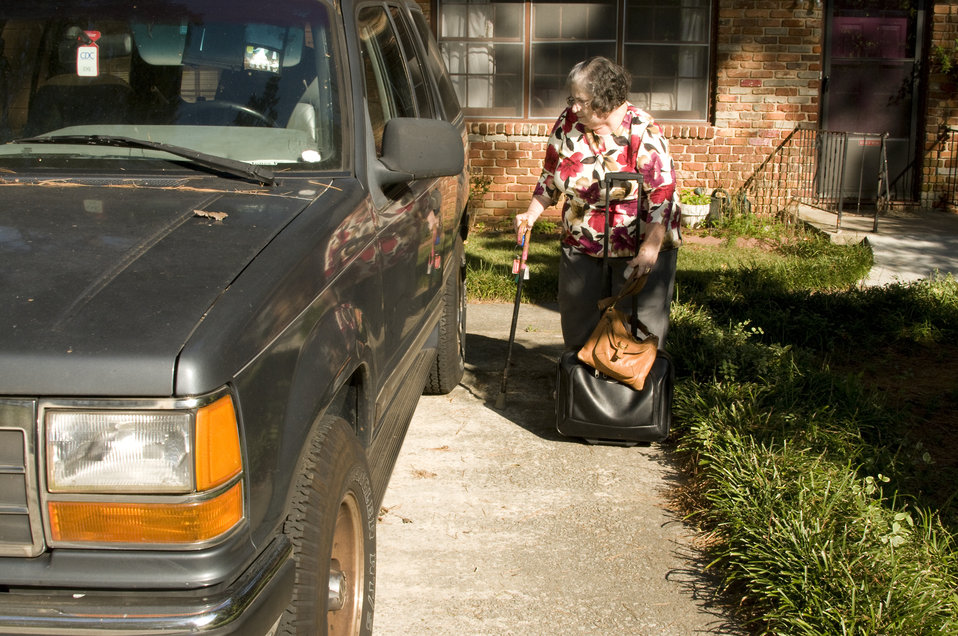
The woman pictured here is a rheumatoid arthritis patient, and was not letting her painful condition impeded her from carrying on with her daily activities, which included the use of a baggage carrier that she was using to move a small piece of luggage over to her vehicle after exiting her home. Note that in her left hand she held on to the luggage carrier and handbag, and in her right she grasped her cane, and car keys. She had paused at the vehicle's driver-side rear door, which she would open, and place the luggage unto the back seat.